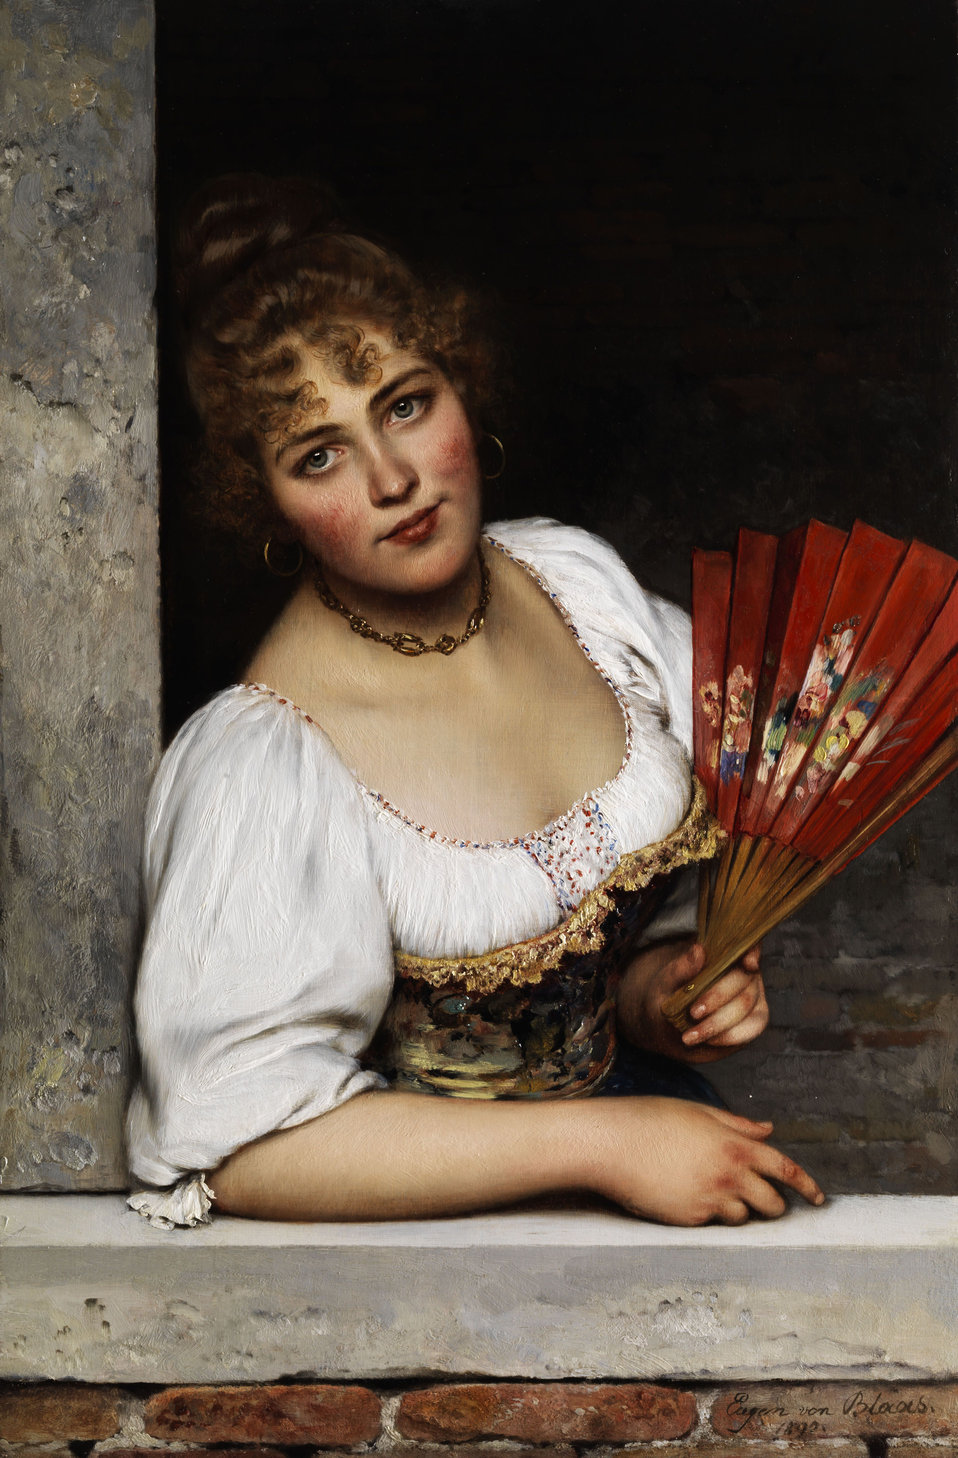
Eugen von Blaas Der rote Fächer 1892